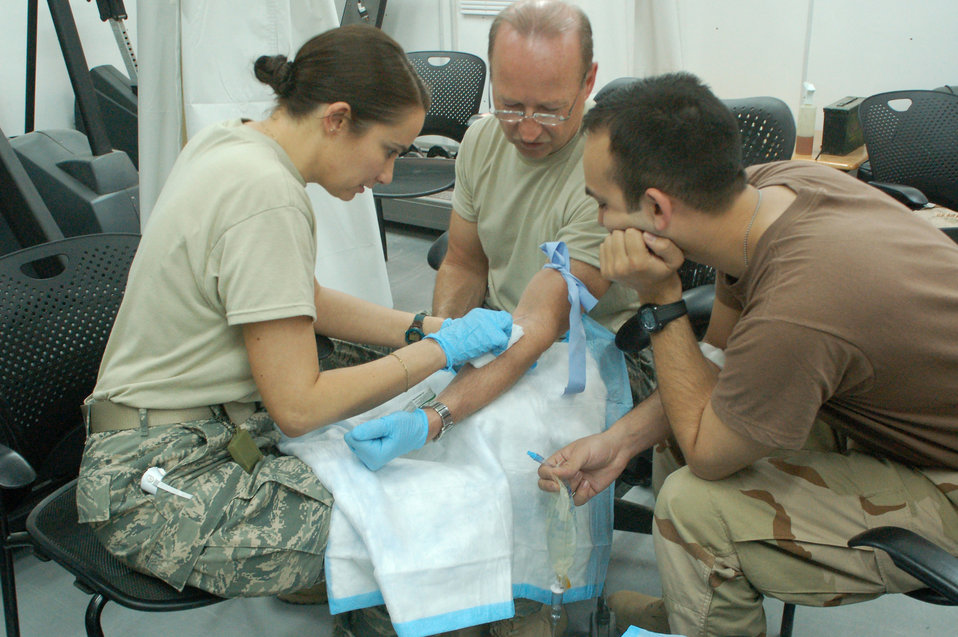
Sather medics prepare for worst, provide their best

Tech. Sgt. Jennifer Harman (right) inserts an IV into Master Sgt. Raymond Arbige's arm while being observed by Staff Sgt. Bryan English. Sergeant English, the only medic in the group, is helping the other members of the 447th Expeditionary Medical Squadron to learn basic medical procedures. In a combat environment, these procedures can be done by anyone with training, leaving the doctors to tend to the seriously injured. Sergeant Harman is an administrative specialist and Sergeant Arbige is a medical logistics specialist.